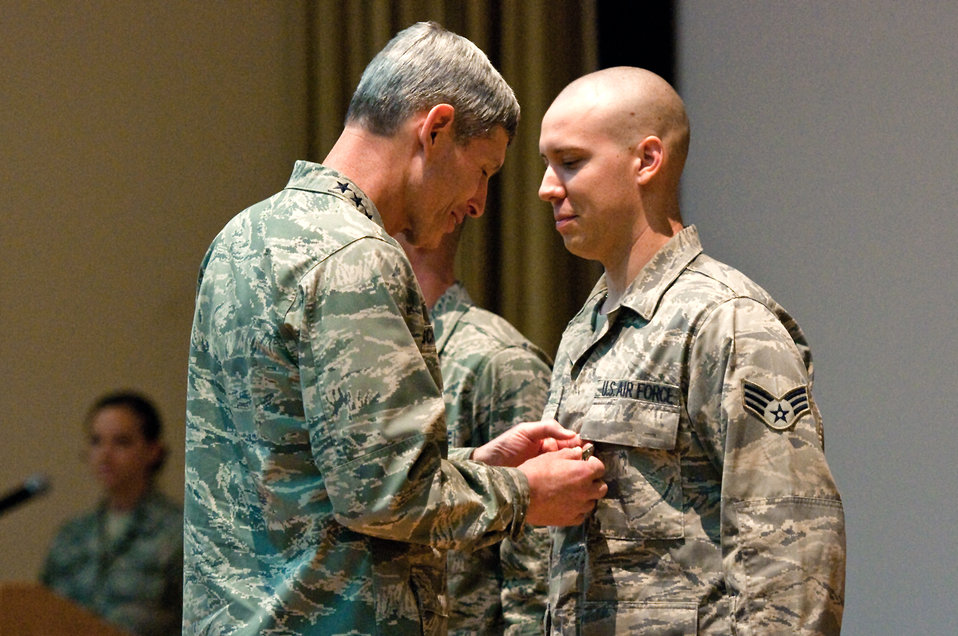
Air Force Chief of Staff Gen. Norton Schwartz presents an Air Force Combat Action Medal to Senior Airman Trent Cichy during a commander's call June 22, 2010, at the 386th Air Expeditionary Wing in Southwest Asia. Airman Cichy, a vehicle operator assigned to the 386th Expeditionary Logistics Readiness Squadron here, was injured May 27, 2010, when his supply convoy was hit by an improvised explosive device.